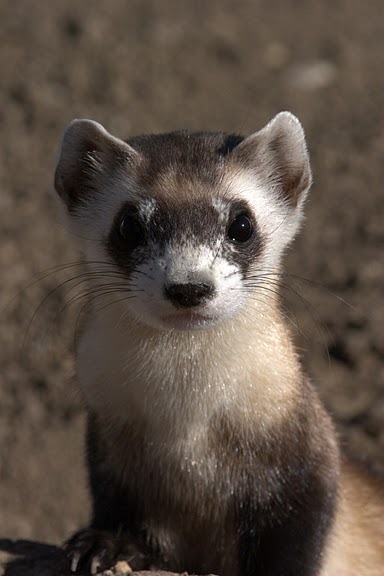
Black-footed Ferret